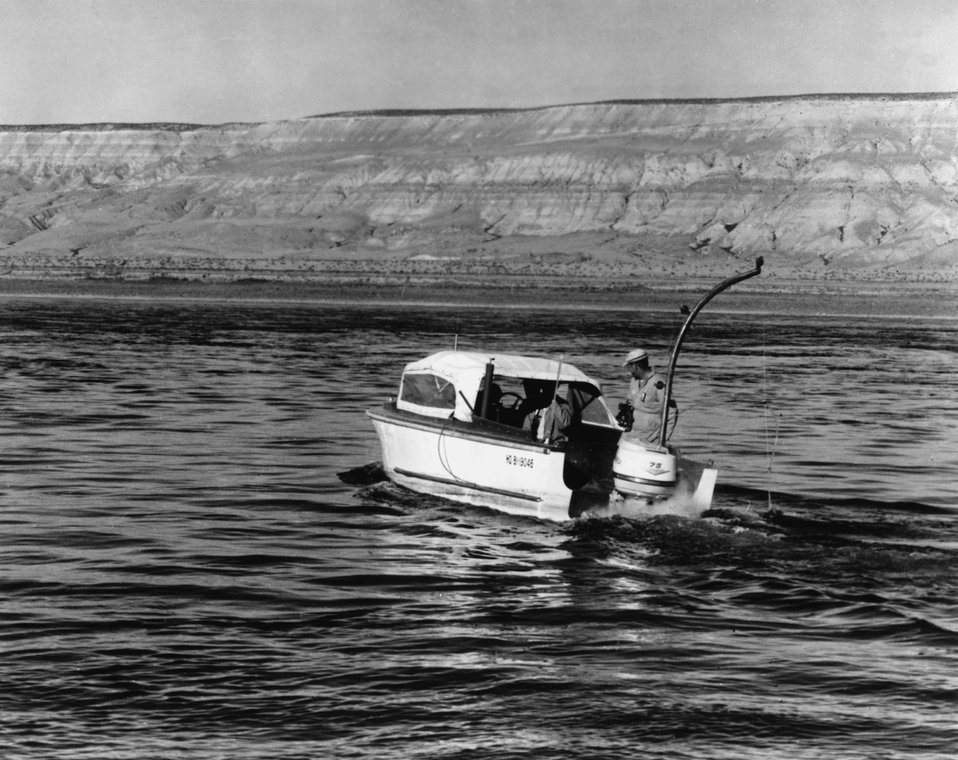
Dye tests are conducted in the Columbia River near the Atomic Energy Commission's Hanford plant (near Richland, Washington). c. 1970